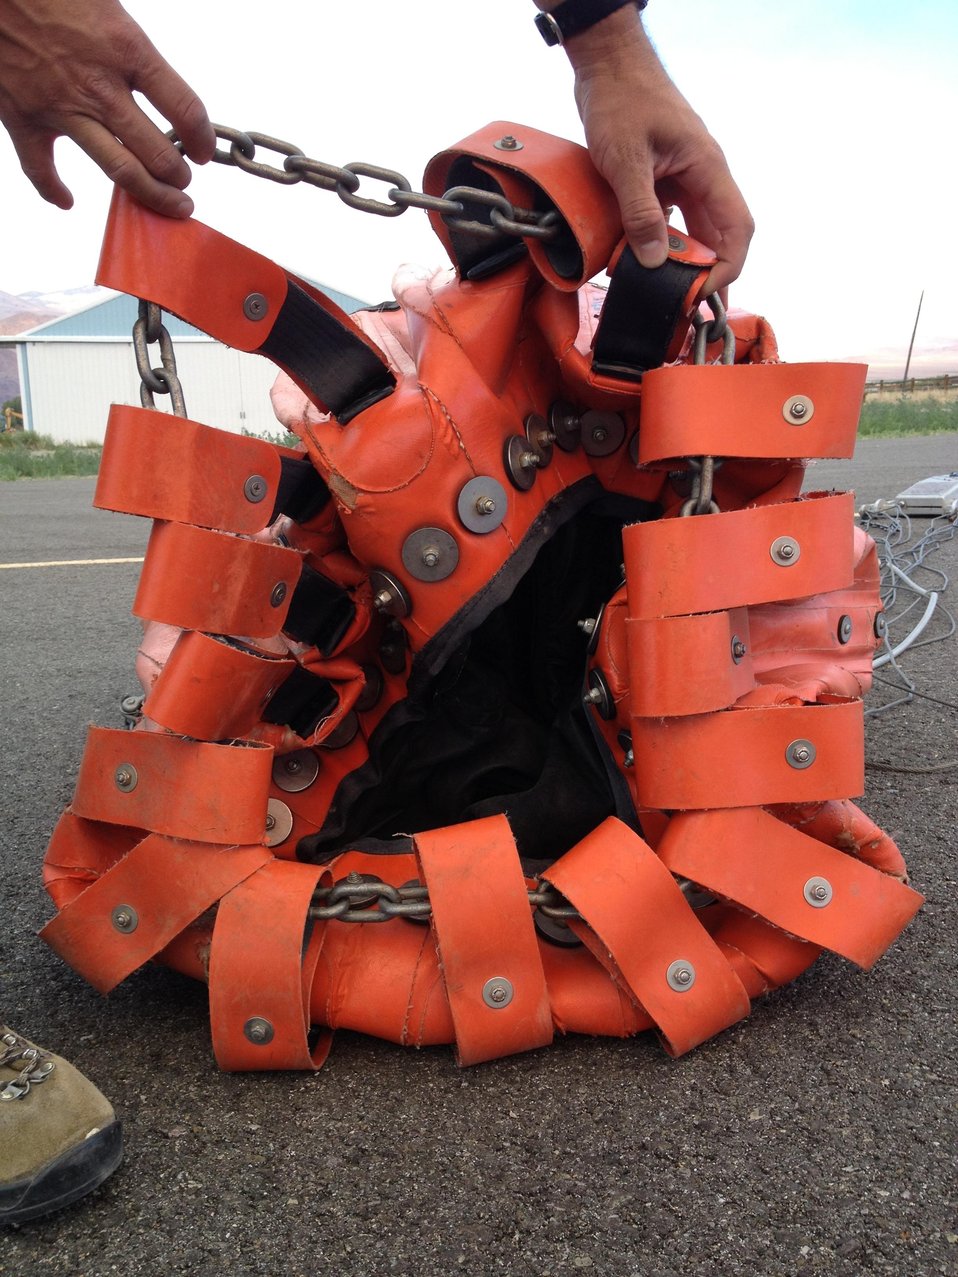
The inside of bucket used on helicopter to fight the Lodgepole Fire. The Lodgepole Fire in the Salmon-Challis National Forest near Challis, ID began on Jul. 20, 2013 by lightning has consumed approximately 13,700 acres and is approximately 15% contained.